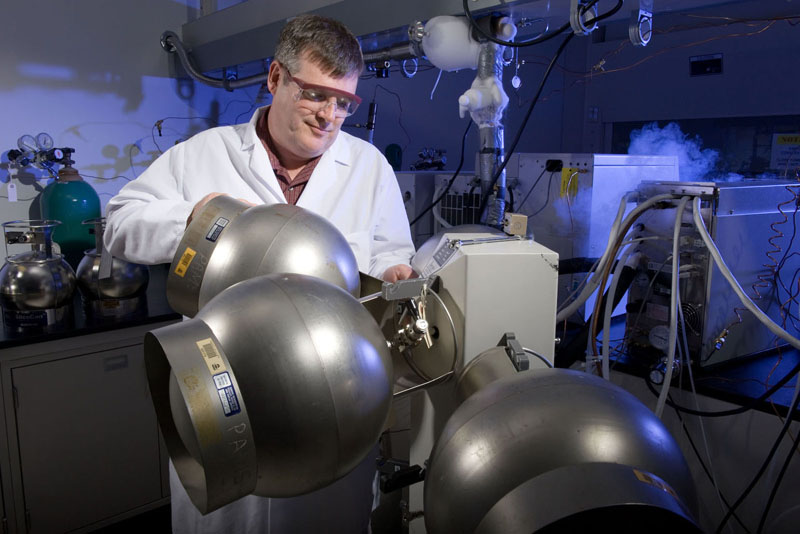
EPA scientist conduct bucket test air monitoring. New England Regional Lab, Boston, MA 2008 USEPA Photo by Eric Vance